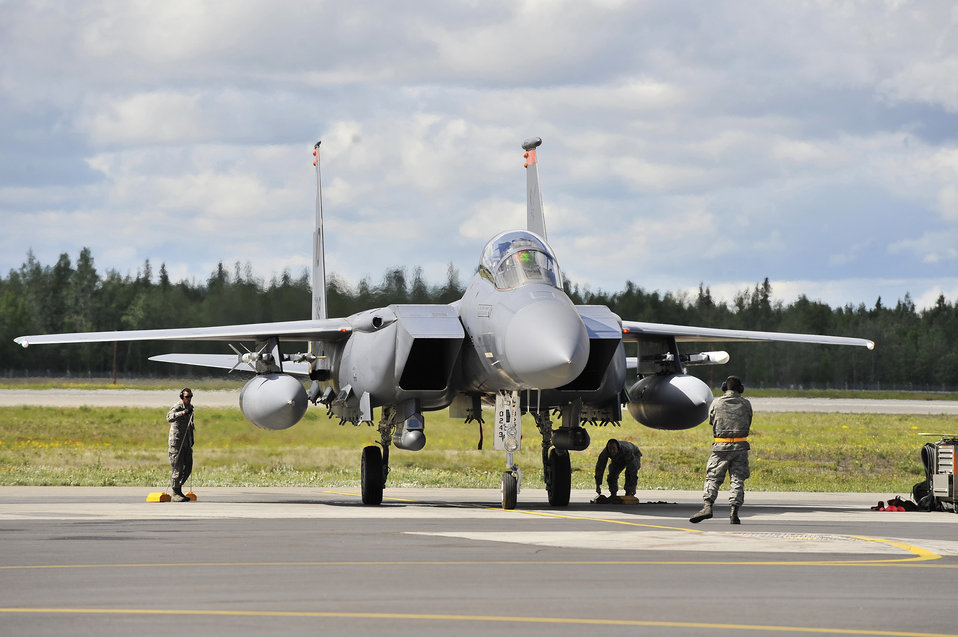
NORTHERN EDGE 2011 exercise

Crew chiefs conduct post-flight operations on an F-15E Strike Eagle June 13, 2011, during the NORTHERN EDGE 2011 exercise at Eielson Air Force Base, Alaska.